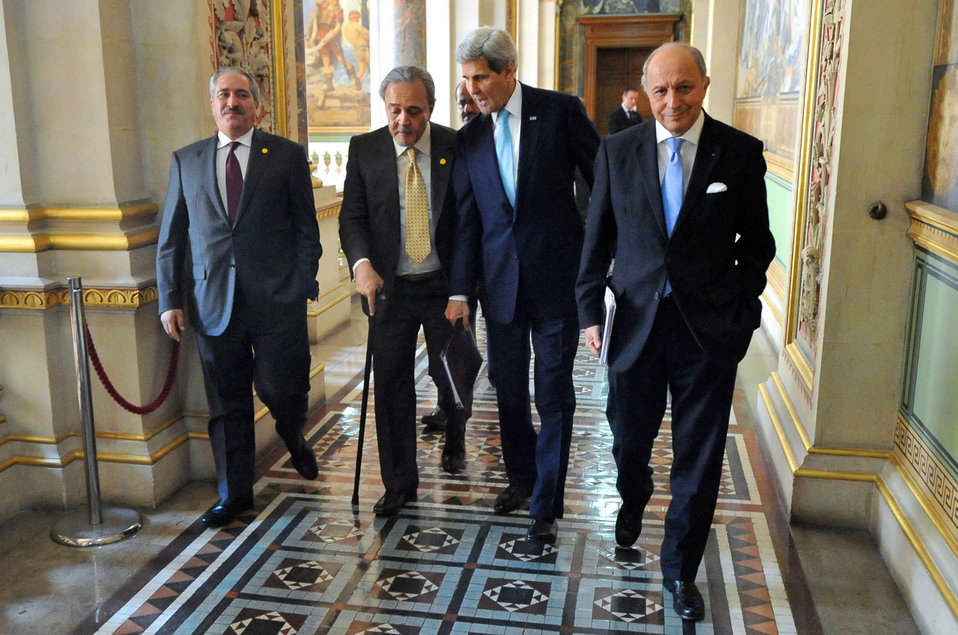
Secretary Kerry Chats With Saudi Foreign Minister al-Faisal Amid Meetings in London

U.S. Secretary of State John Kerry, accompanied by Jordanian Foreign Minister Nasser Judeh and French Foreign Minister Laurent Fabius, chats with Saudi Foreign Minister Saud al-Faisal amid a series of ministerial meetings at the Foreign and Commonwealth Office in London on May 15, 2014.